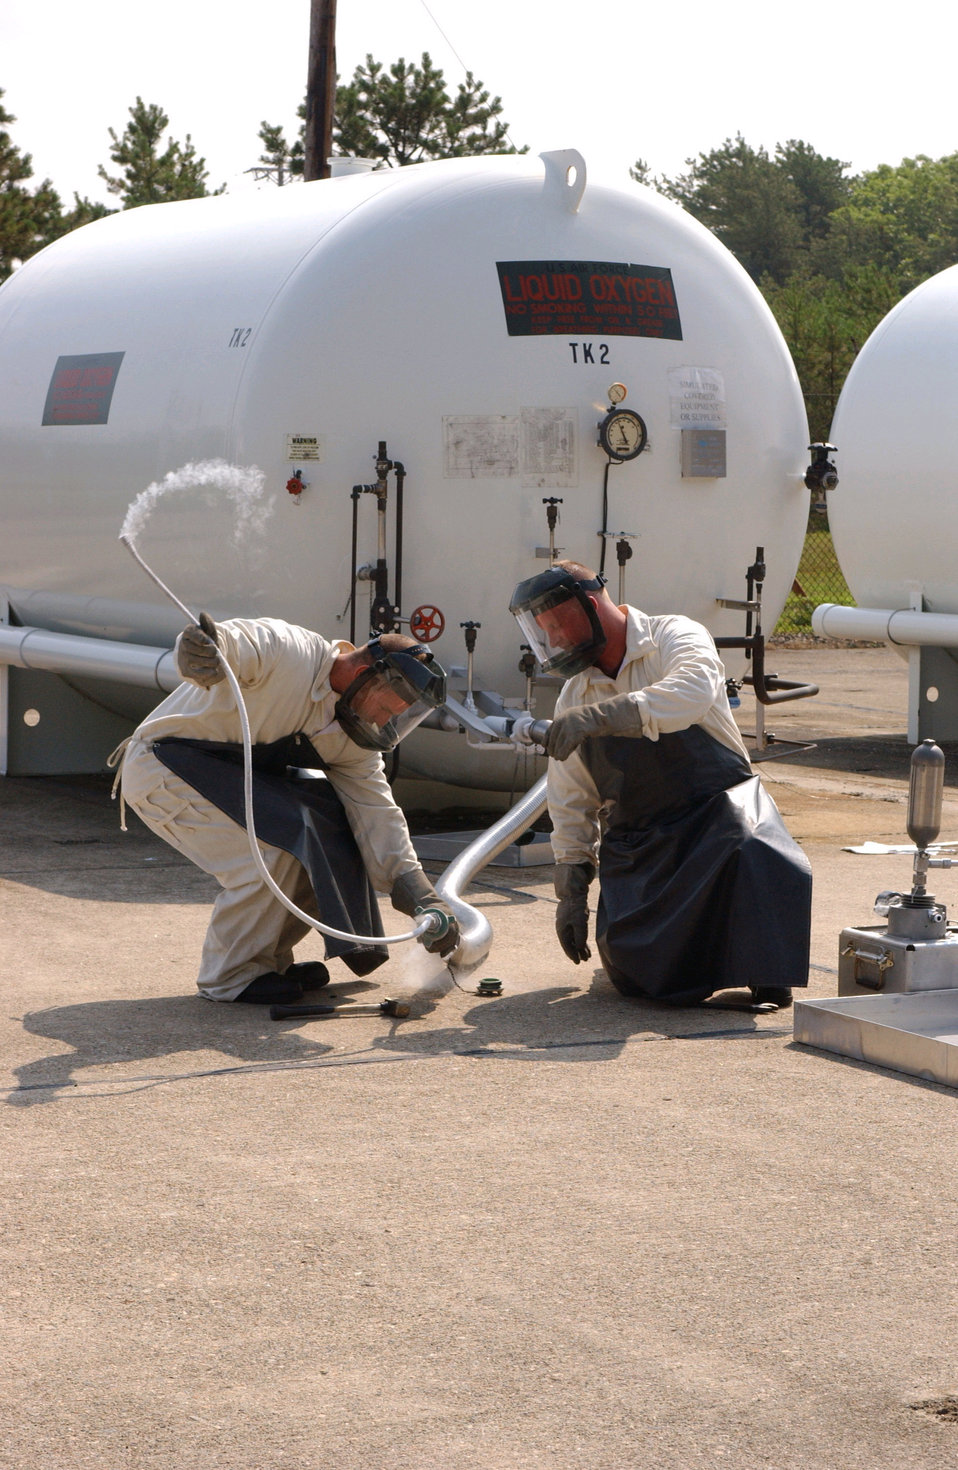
Gathering a sample

OTIS AIR NATIONAL GUARD BASE, Mass. -- Senior Airman Ryan Ramsey (left) and Tech. Sgt. Daniel Lanoue acquire a sample of liquid oxygen during the operational readiness exercise here July 20.